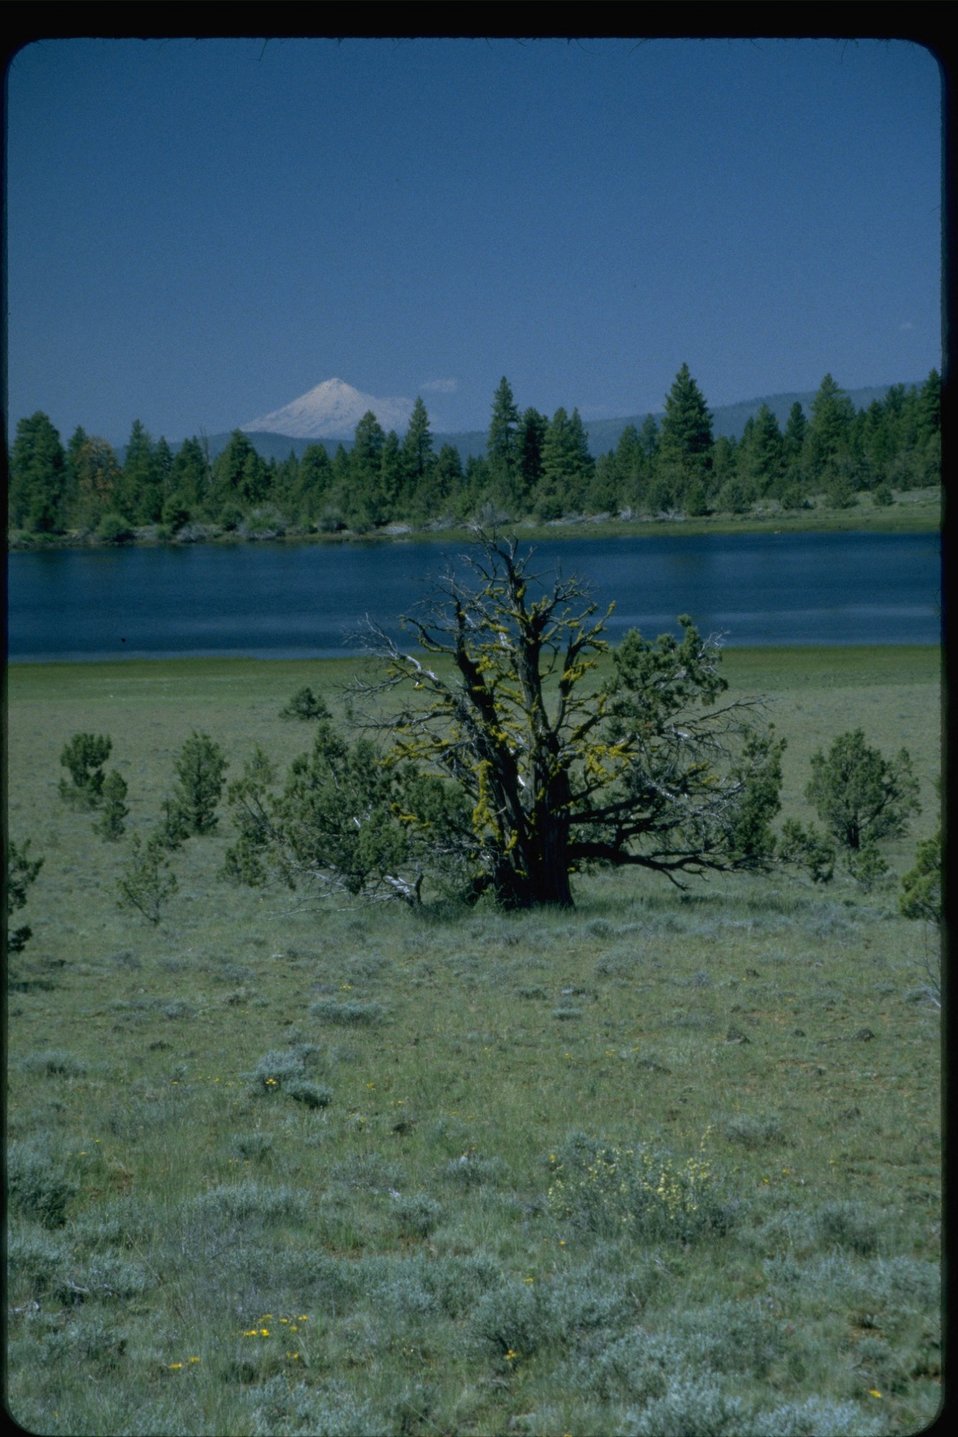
Upper Midway Reservoir with Mt. Shasta in distance.